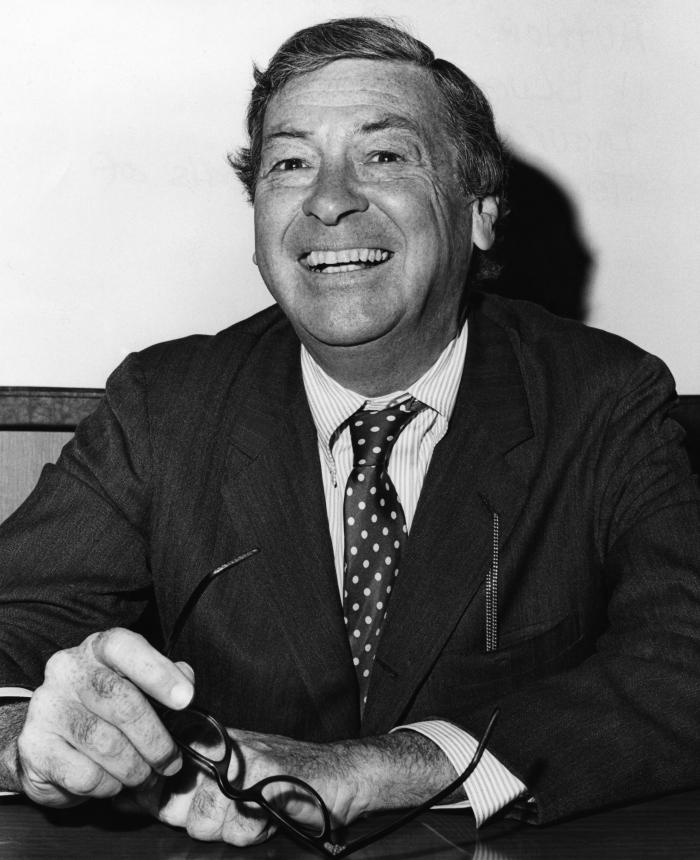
This was a photographic portrait of public health investigative journalist and book author, Berton Roueche.